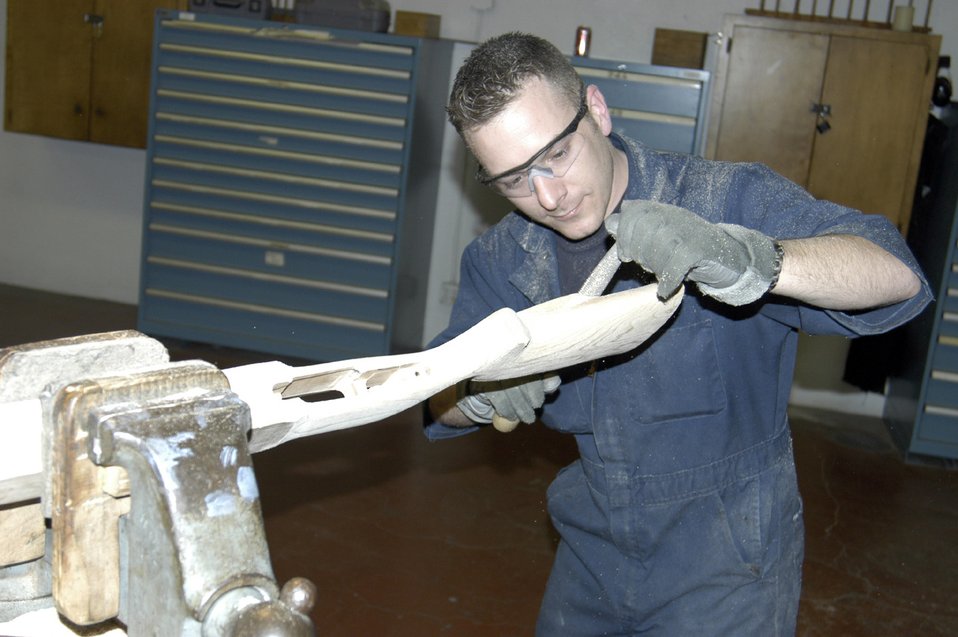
Gunsmith shop gets new name, command

LACKLAND AIR FORCE BASE, Texas -- Staff Sgt. Brendan McGloin sands a wooden stock for a Remington .308-caliber rifle Jan. 20. Sergeant McGloin is a combat arms specialist with the U.S. Air Force Gunsmith Integrated Product Team here.